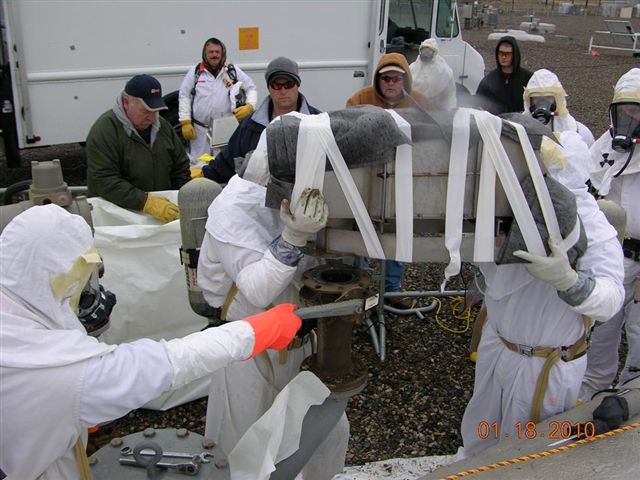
Single Shell Tank Life Extension: radial filter replacement